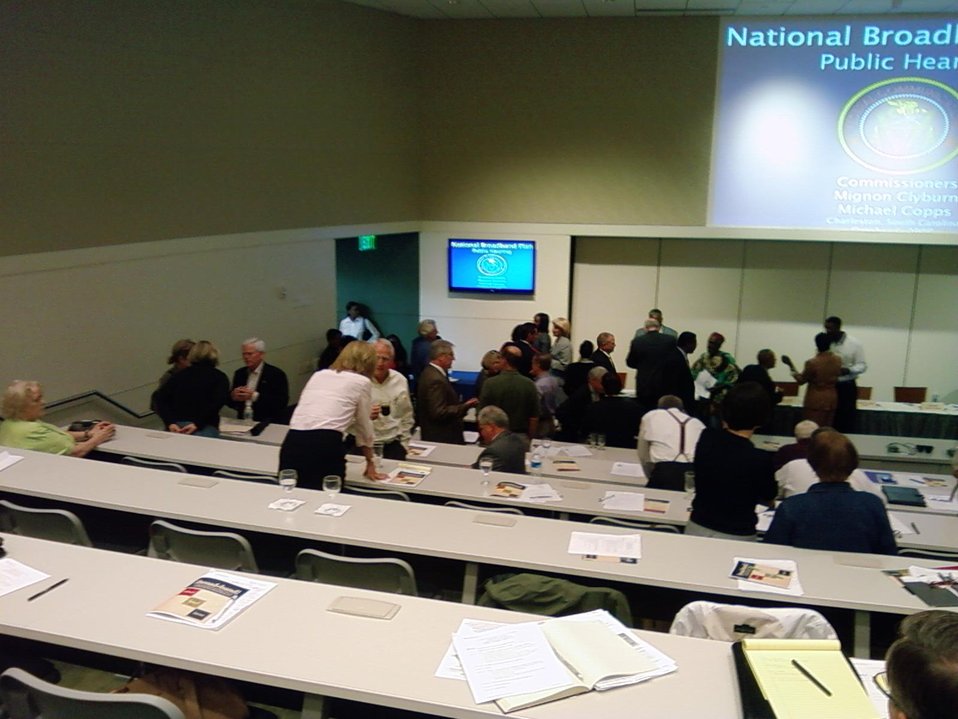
SC event 16

Broadband Field Hearing, in Charleston, South Carolina. 10-06-09